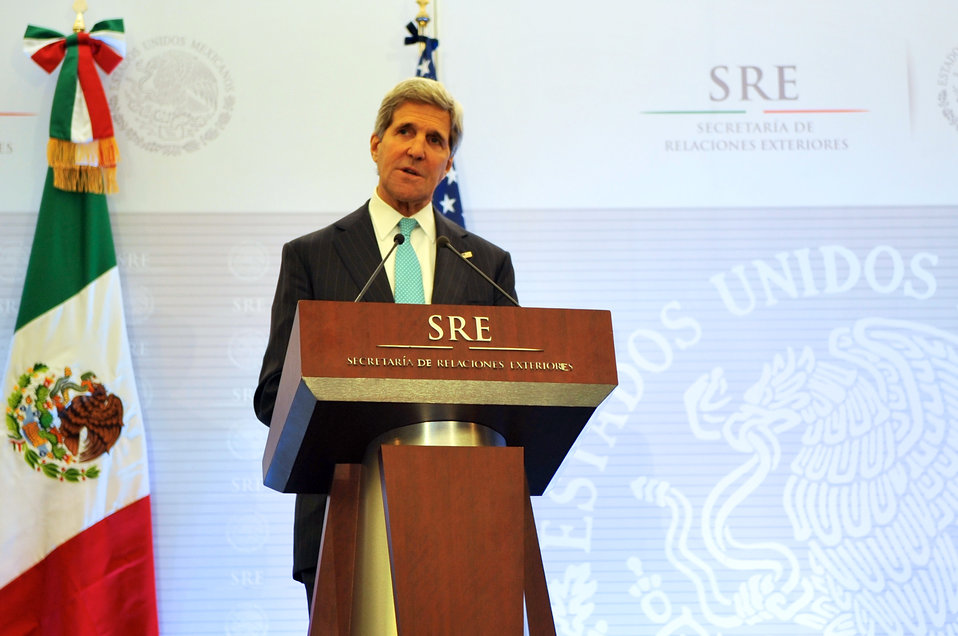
Secretary Kerry Speaks During Joint News Conference With Mexican Foreign Secretary Meade

U.S. Secretary of State John Kerry addresses U.S. and Mexican reporters during a joint news conference with Mexican Foreign Secretary José Antonio Meade following a series of meetings in Mexico City on May 21, 2014.